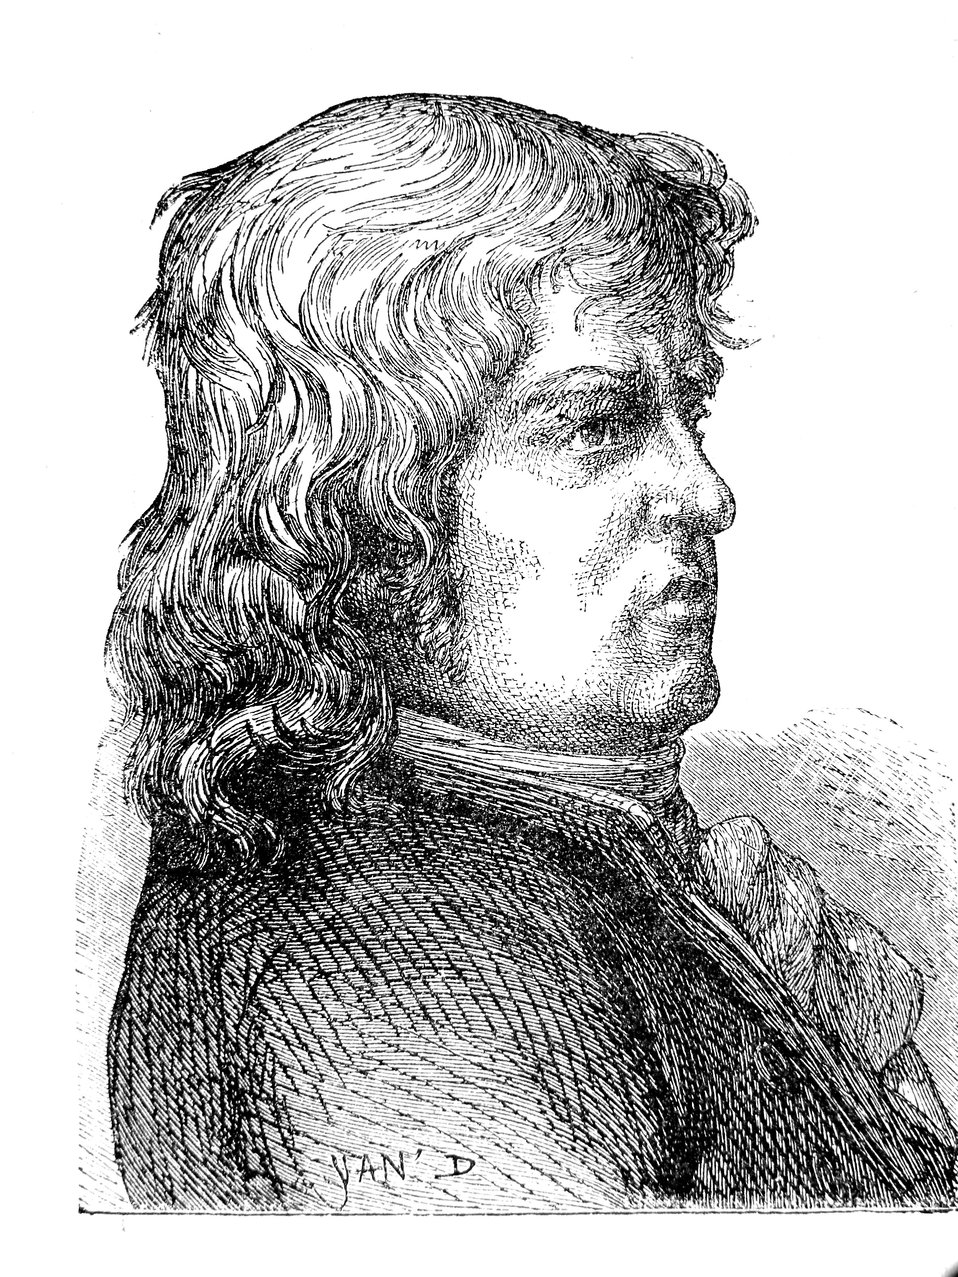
AduC 065 Vadier (M.G.A., 1736-1828)